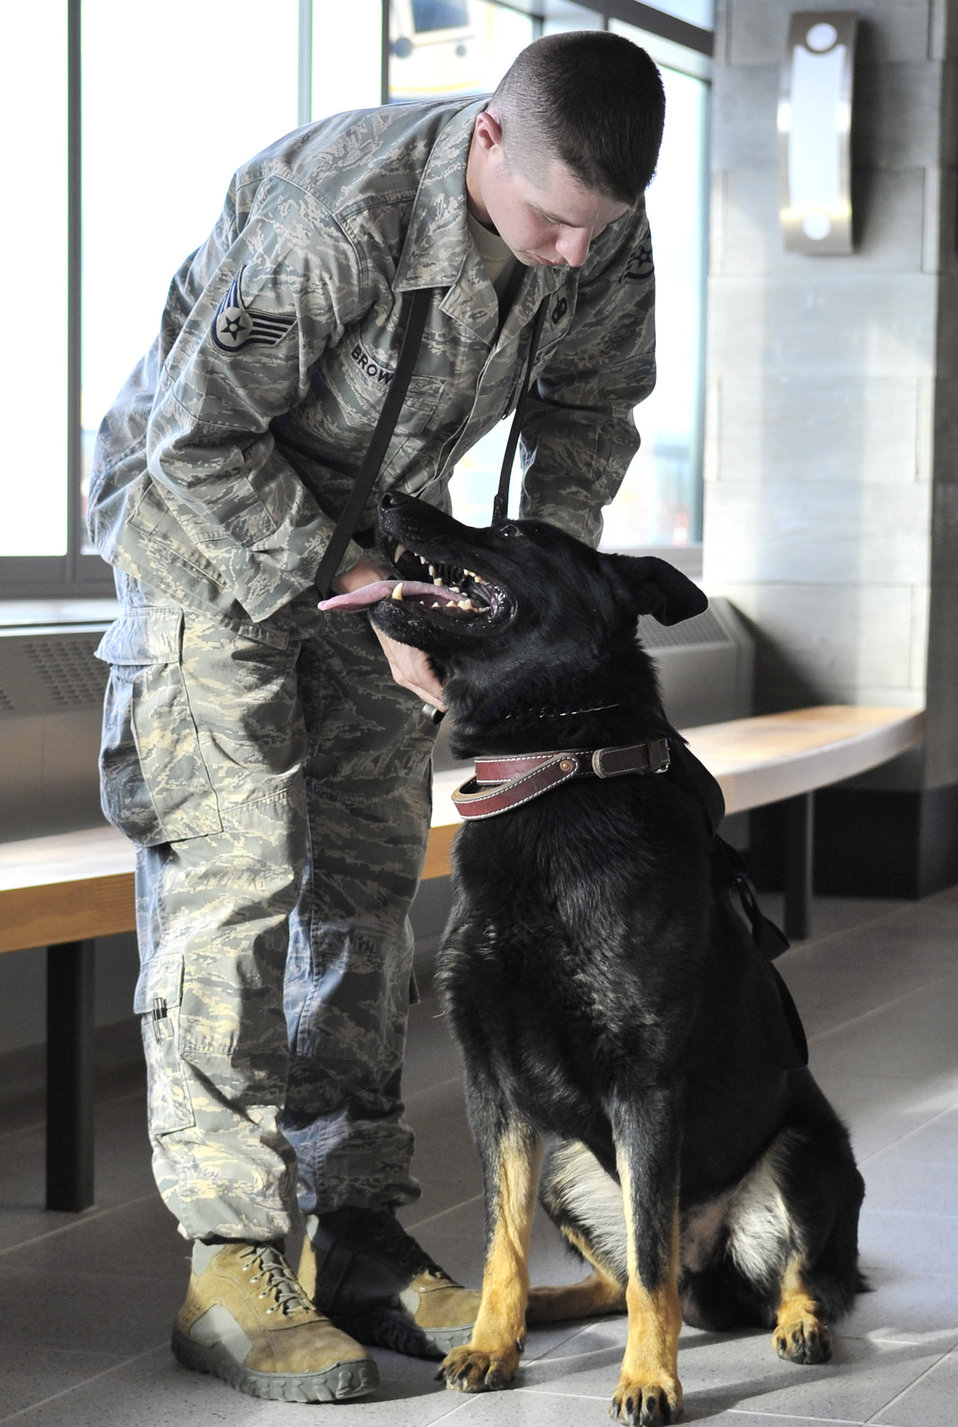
Working dog, EOD team partner to secure Alaska's interior

Staff Sgt. Robert Brown puts a leash on military working dog Benny before performing a search of the new wing at the Fairbanks International Airport in Fairbanks, Alaska, May 5. The Department of Homeland Security and Eielson Air Force Base, Alaska, joined together to clear the new wing of threats. Sergeant Brown and Benny are a MWD team assigned to the 354th Security Forces Squadron, Eielson AFB.